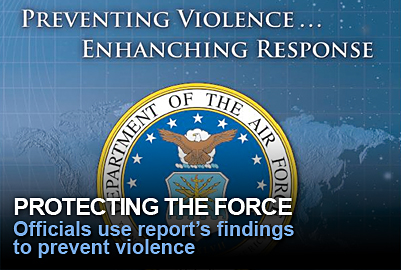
Protecting The Force, Officials use report's findings to prevent violence.